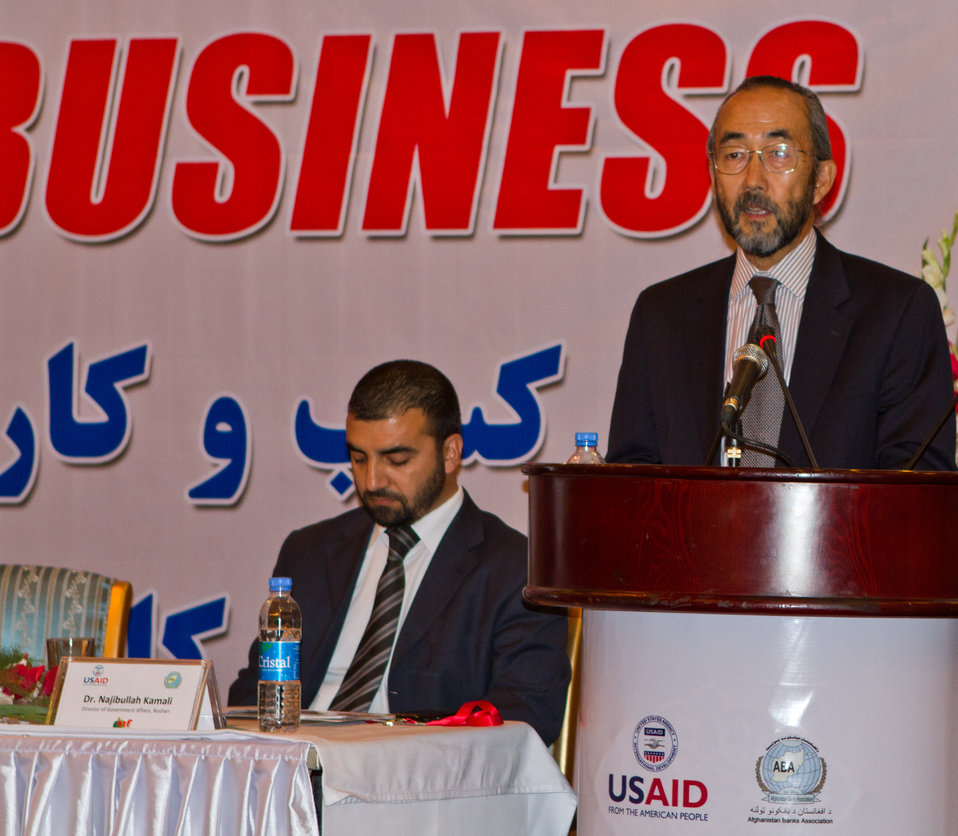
A2F Exhibition

USAID Mission Director Dr.Yamashita at A2F Exhibition